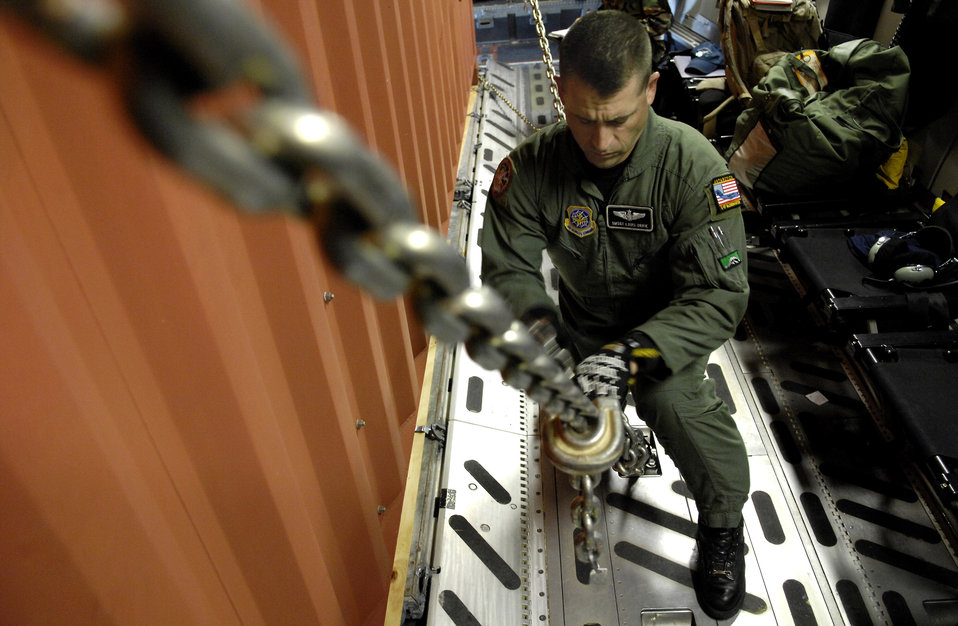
Ice, ice baby!

Senior Master Sgt. Louis Orrie tightens a cargo chain on a C-17 Globemaster III prior to taking off Nov. 26 from Christchurch, New Zealand, during Operation Deep Freeze. Sgt. Orrie, a loadmaster, along with other Reserve and active duty Airmen from McChord Air Force Base, Wash. are at Christchurch supporting the 13th Air Force-led Joint Task Force Support Forces Antarctica, Operation Deep Freeze. Operation Deep Freeze is a unique joint- and total-force mission that has supported the National Science Foundation and U.S. Antarctic Program that began in 1955.